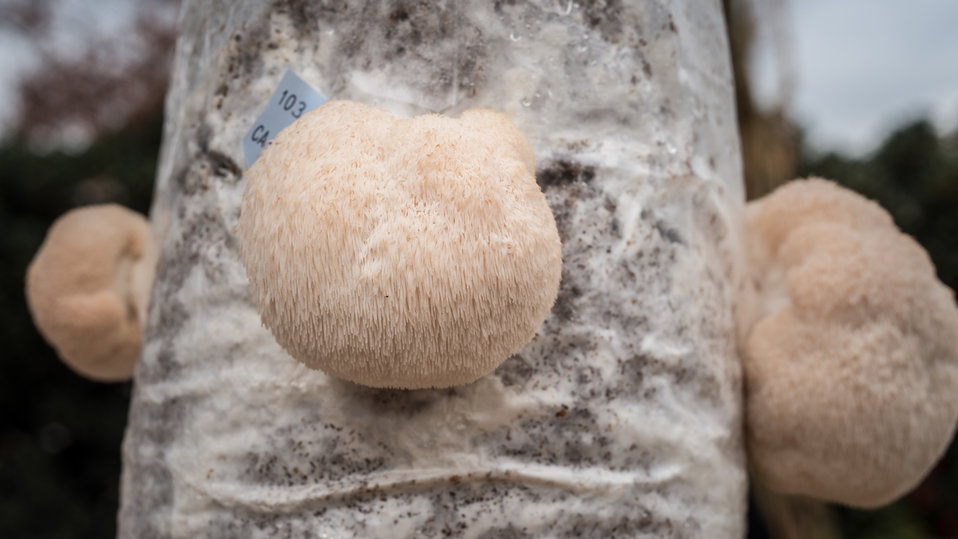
Pom pom (egg shaped) mushrooms growing from a plastic wrapped sawdust growing log, on display at the U.S. Department of Agriculture (USDA) farmers markets and Harvest Festival at the USDA Whitten Building east parking lot in Washington, DC, on Friday, November 22, 2013.